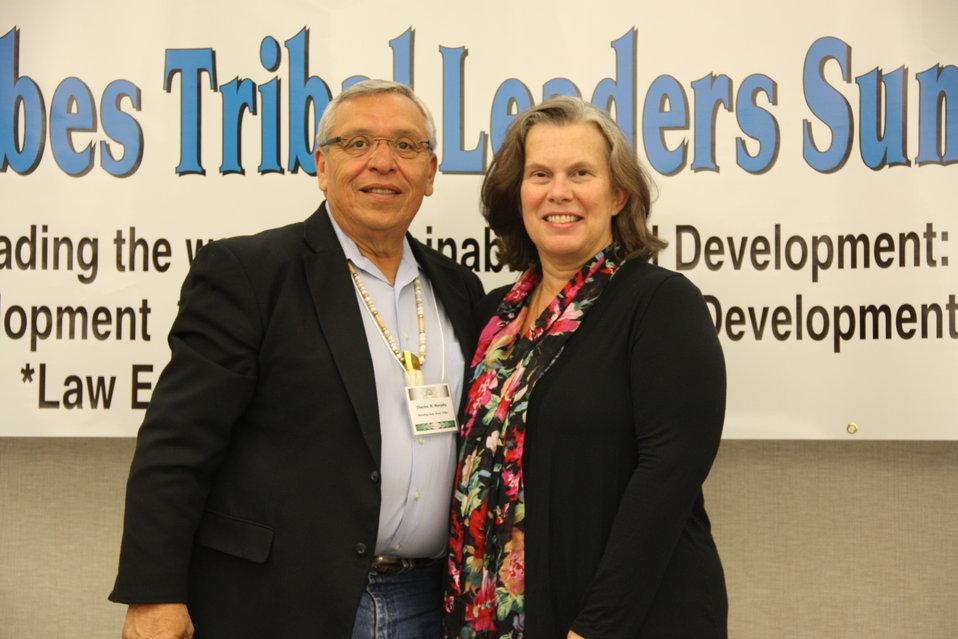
U.S. Department of Agriculture (USDA) Senior Advisor to the Secretary for Tribal Relations Janie Hipp and Standing Rock Sioux Tribal Chairman Charles Murphy meet at the 16th Annual United Tribes Tribal Leaders Summit in Bismarck, ND on Sept. 6, 2012. USDA recently approved funding to improve the water treatment system on the Reservation.